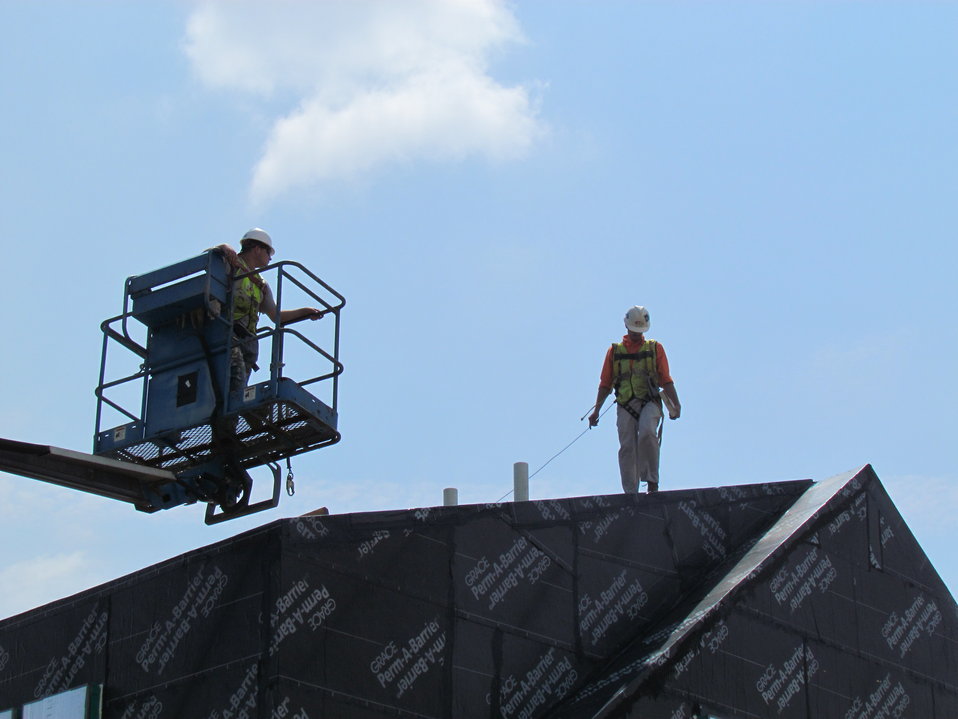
Net-Zero Energy Residential Test Facility - Photo showing workmen completing the installation of the air/moisture barrier on roof of facility.